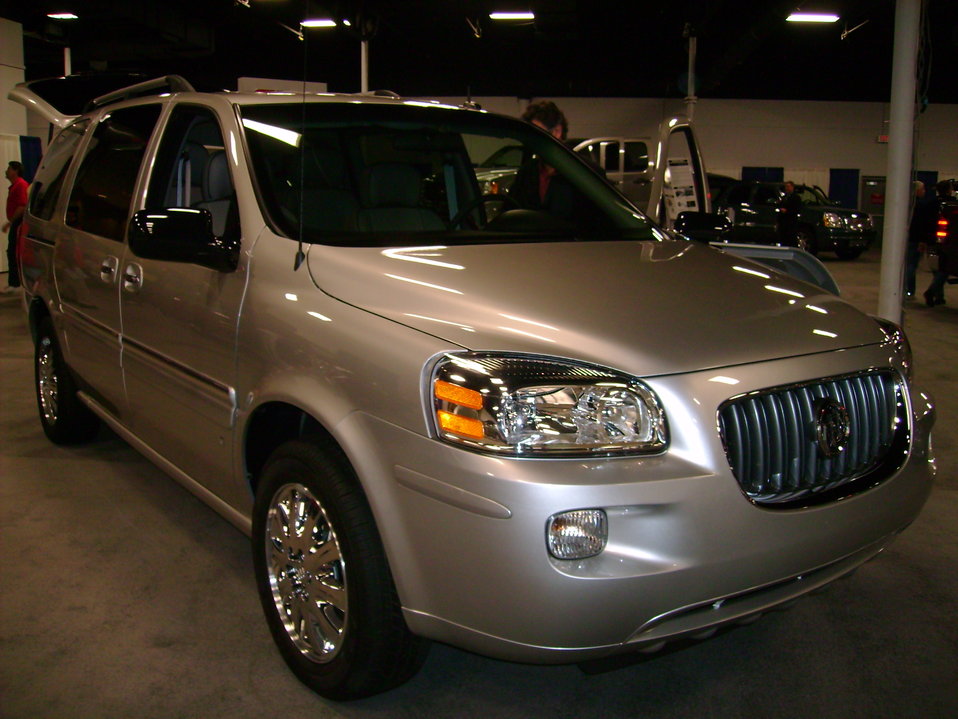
2007 Buick Terraza photographed at the Auto Show in Boston.